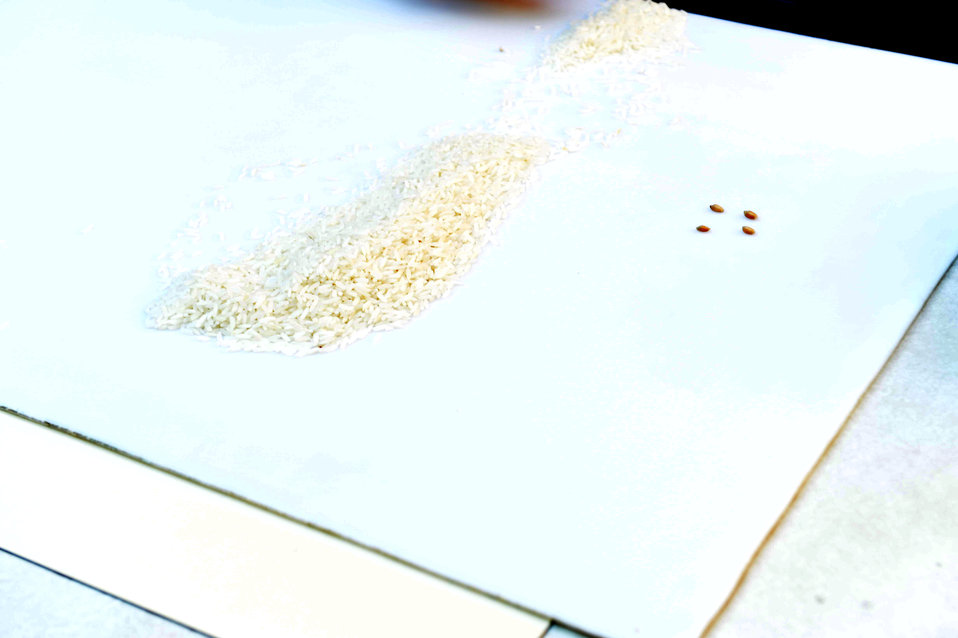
U.S. Department of Agriculture (USDA) Grain Inspection, Packers and Stockyards Administration (GIPSA) Federal Grain Inspection Service (FGIS) employee examines rice samples on white background to check for imperfections at the FGIS inspection laboratory in New Orleans, LA on Monday, Nov. 18, 2013.